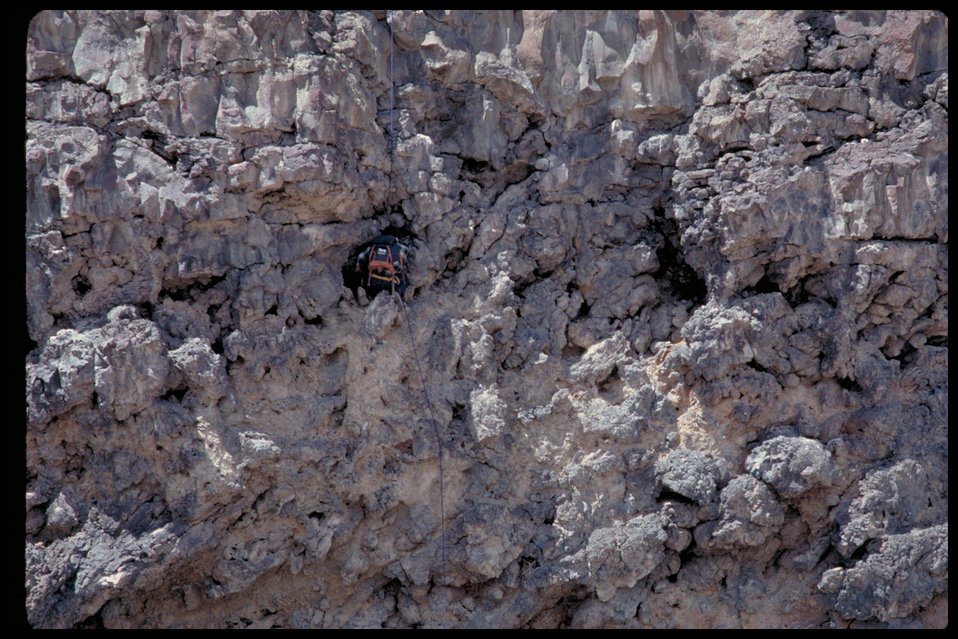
Examining nesting site Research Birds of Prey National Conservation Area BOP Owyhee Field Office LSRD Lower Snake River District